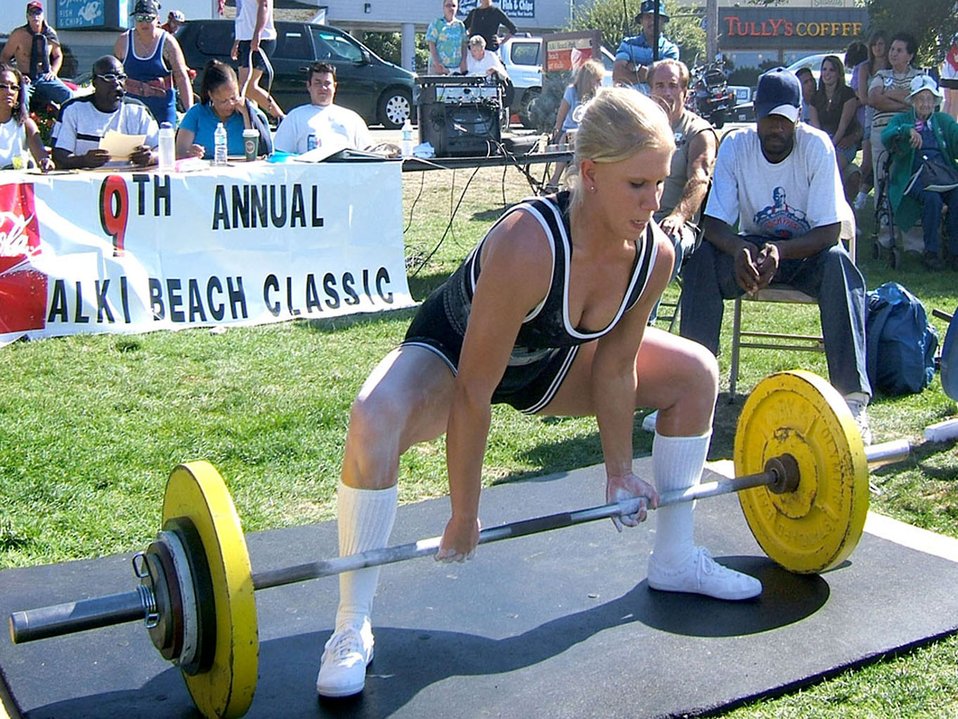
Heavy lifters

ALKI, Wash. (AFPN) -- Senior Airman Mandi Gast achieved her personal best with a dead lift of 303 pounds during competition.